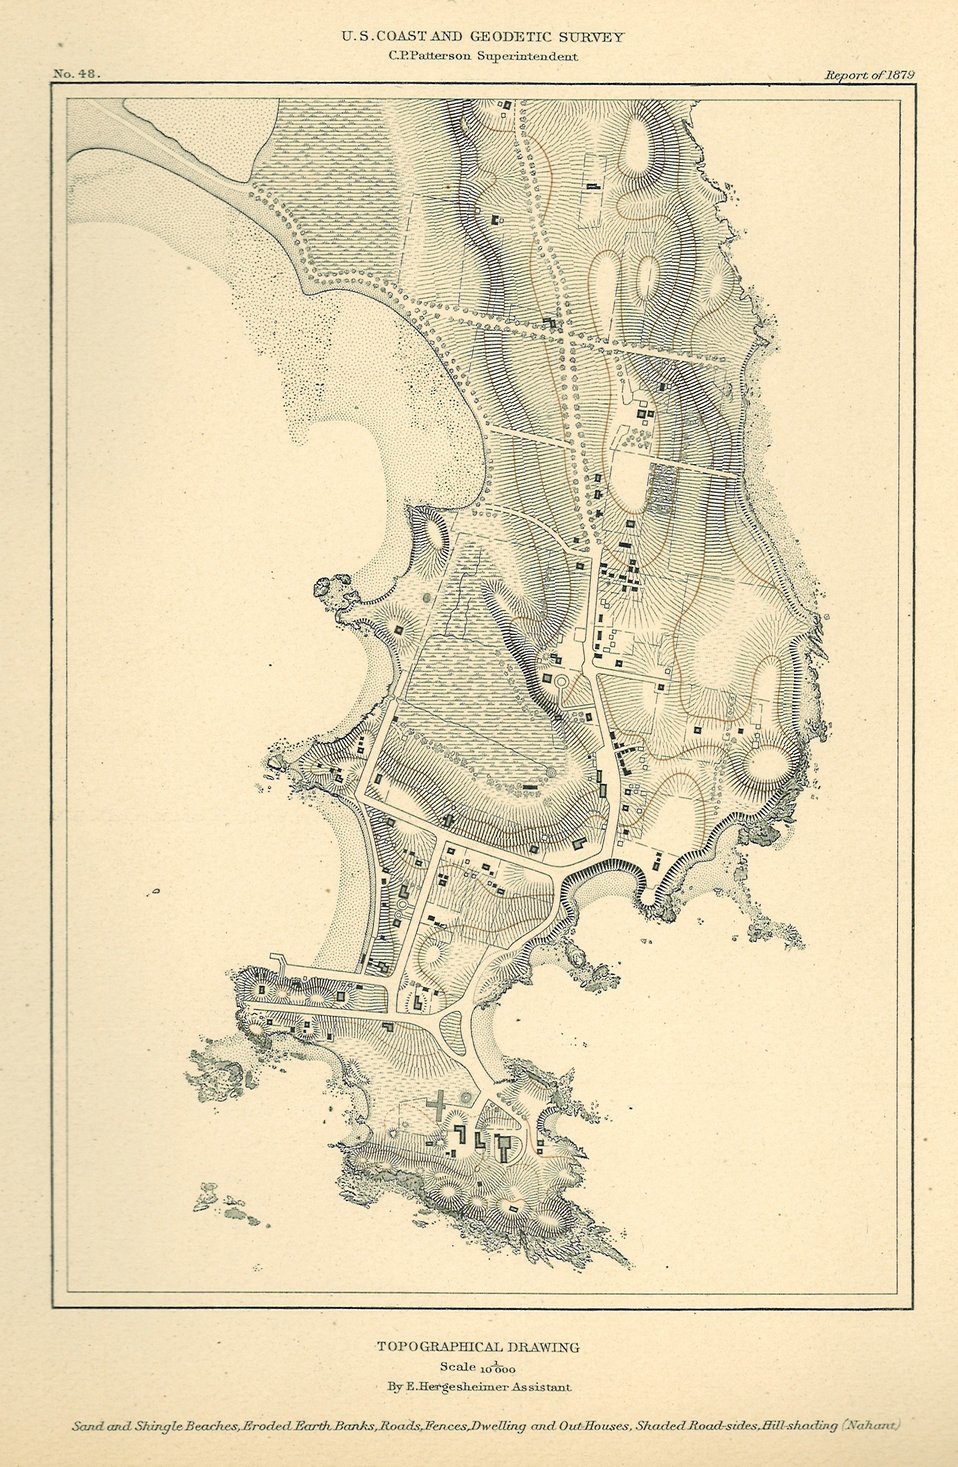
Chart of Richmond Island Harbor. The topography of this sheet was produced by Alexander Wadsworth Longfellow, a brother of the poet Henry Wadsworth Longfellow . See image theb3723 for a humorous cartoon by Alexander concerning his work on Richmond Island.